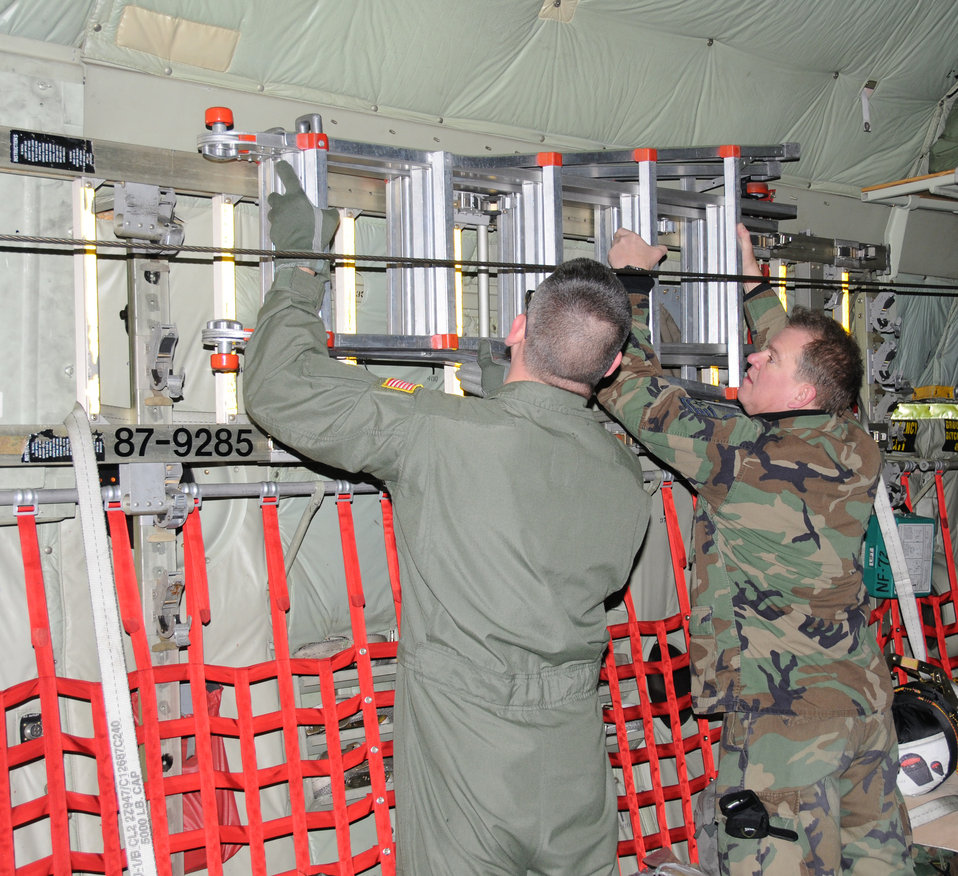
Niagara Falls Reserve Station sends humanitarian aid

Master Sgts. Scott Dixon and Ronald Szpaicher secure the cargo area for take-off Jan. 16, 2010, at Niagara Falls Air Reserve Station, N.Y., as they prepare to leave on a mission for Haiti. The master sergeants will spend the next five days airlifting supplies in to the affected area. Sergeants Dixon and Szpaicher are assigned to the 107th Airlift Wing.